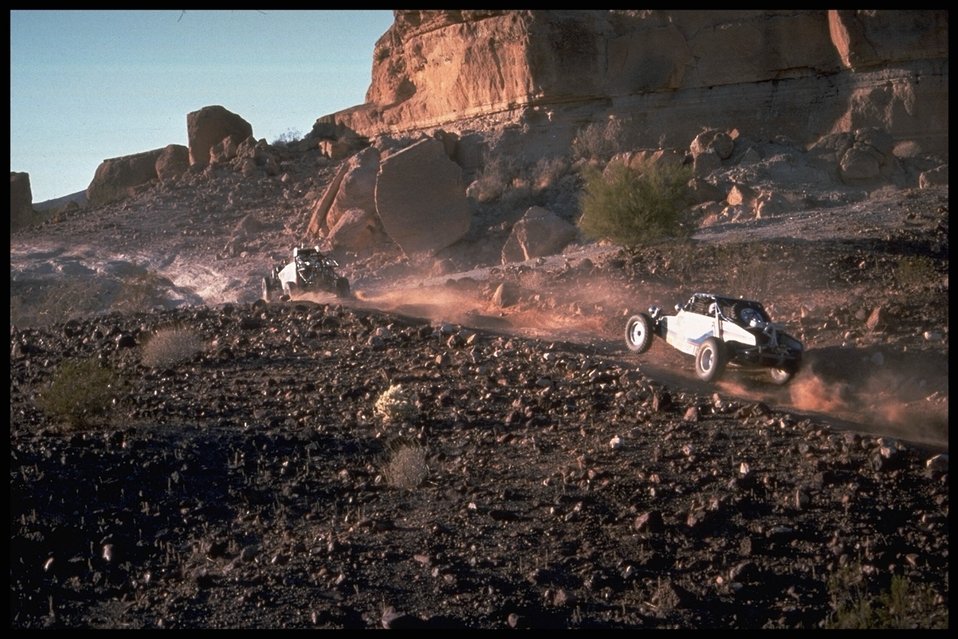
Dune buggies can be great fun on Arizona public lands, but please be careful!